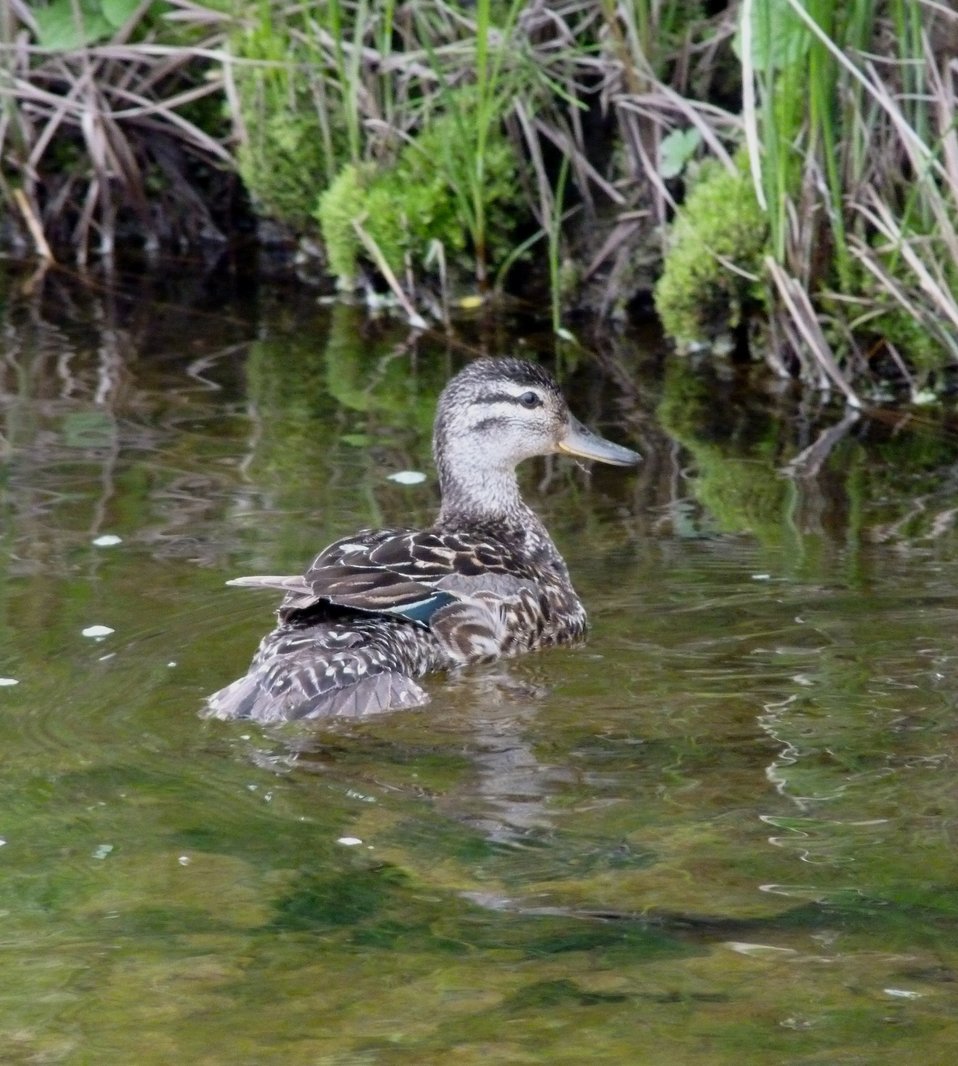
Green-winged Teal

Andreafsky wilderness, Yukon Delta National Wildlife Refuge